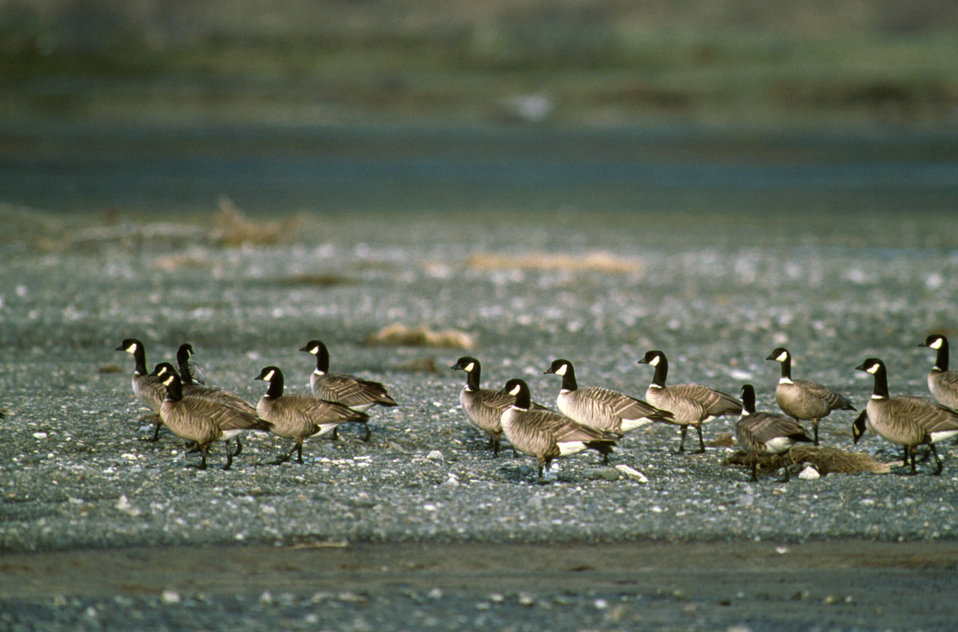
Aleutian Canada Geese.